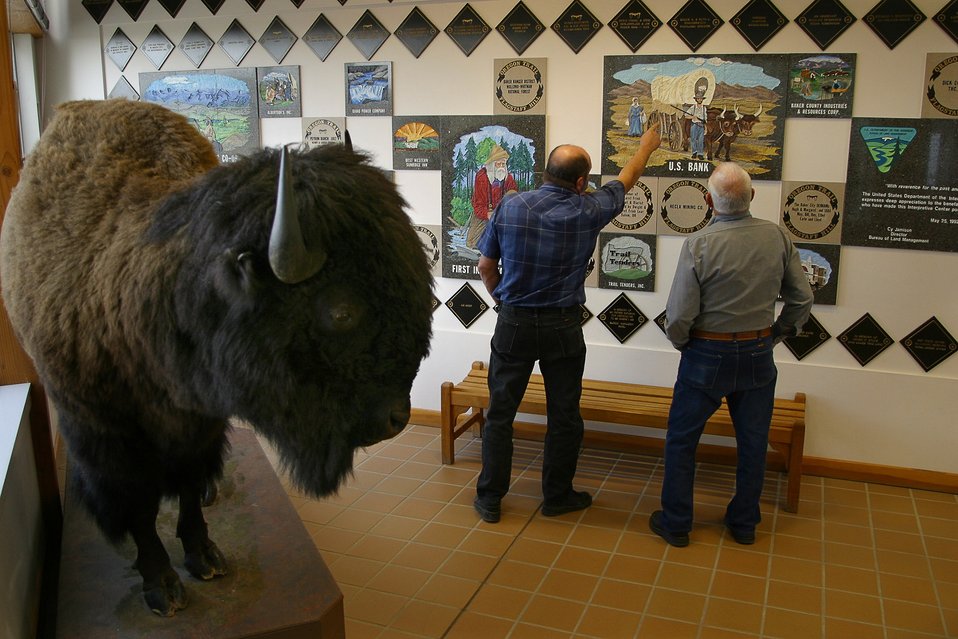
Visitors can relax and view contributor's tiles in the National Historic Oregon Trail Interpretive Center.